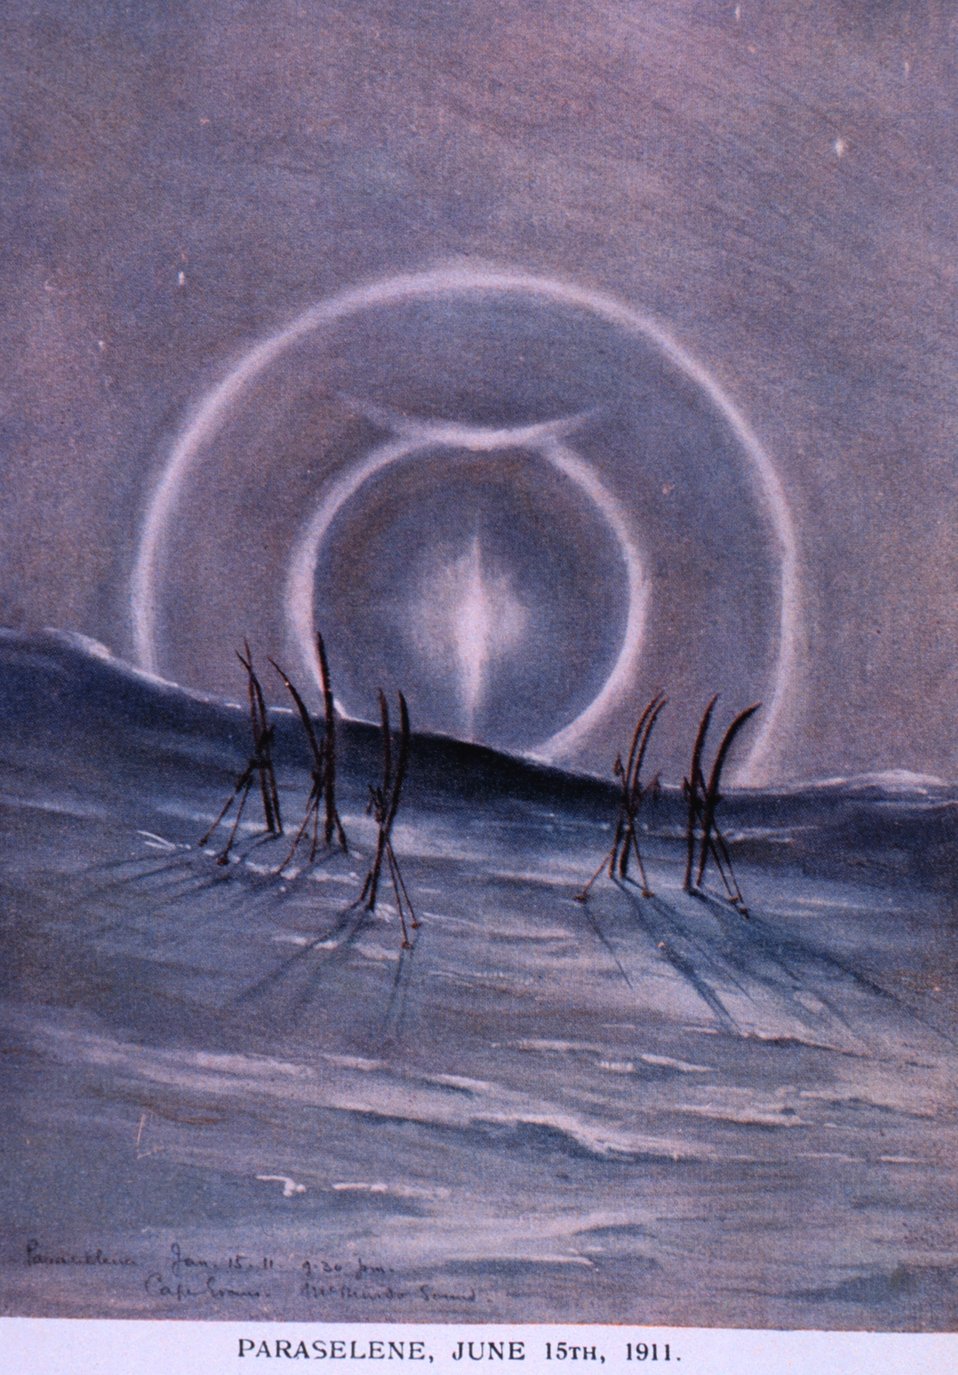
Paraselene, June 15th, 1911. In: 'Scott's Last Expedition', 1913. Dodd, Mead, and Company, New York. P. 178. Vol. I. Library Call Number G850 1910 .S35 1913.